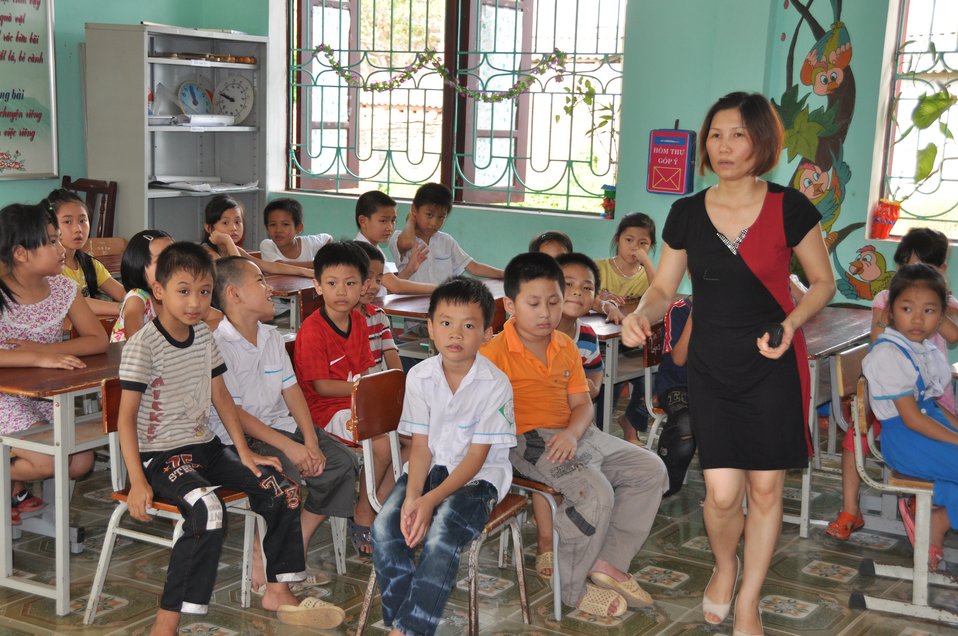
USAID supports deworming education and medication distribution in Bac Giang Province

May 20, 2013